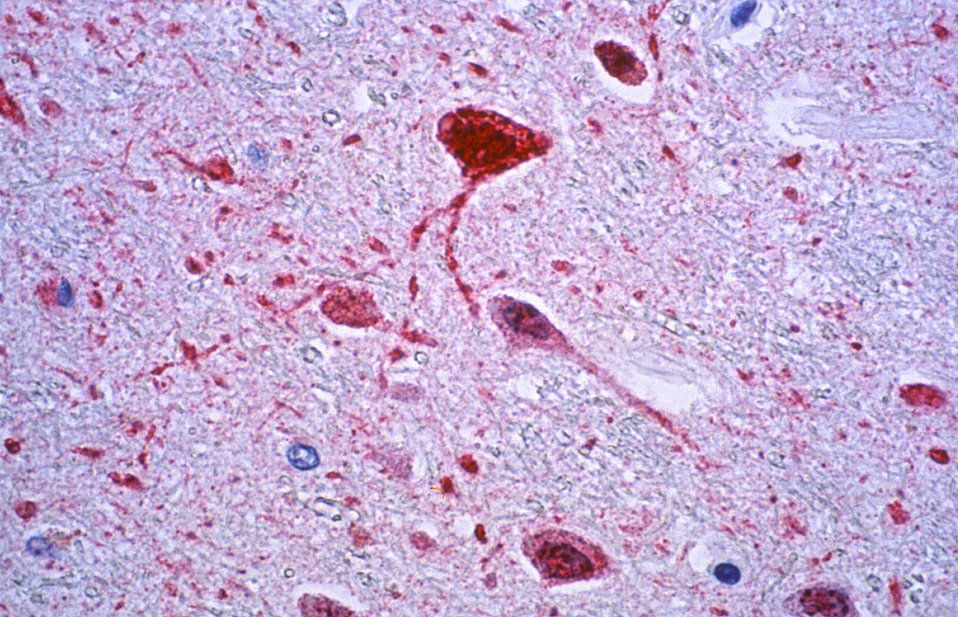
Using immunohistochemical (IHC) technique, this photomicrograph of a human tissue specimen, revealed some of the cytoarchitectural histopathologic changes associated with a Nipah virus infection.